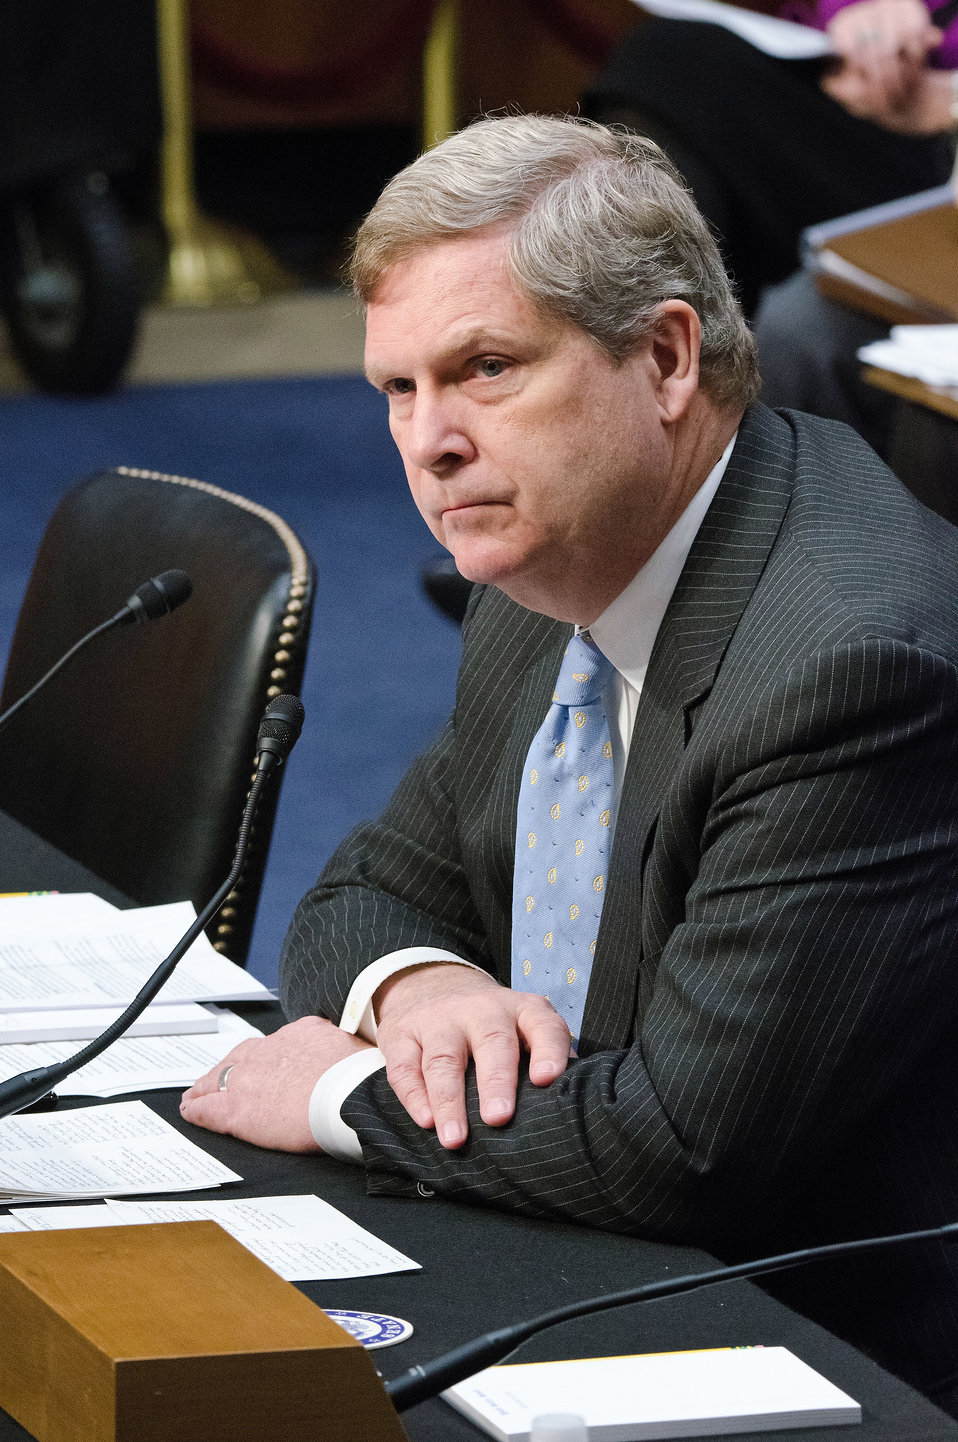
Agriculture Secretary Tom Vilsack listens to questions posed by Senators on the Senate Agriculture Committee during testimony on “Healthy Food Initiatives, Local Production and Nutrition,” on Wednesday, March 7, 2012 in Washington, D.C.